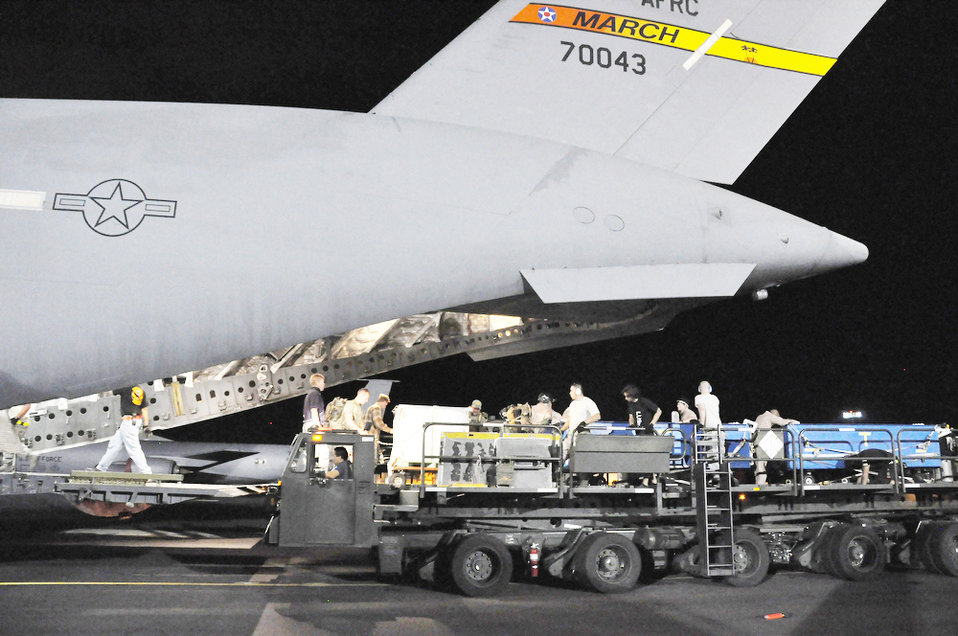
Transportation Command planning equipment shipments

Transportation planners are working closely with operations specialists to accomplish the mission of delivering 30,000 U.S. troops and equipment to Afghanistan when they are needed. They will use C-17 Globemaster IIIs, like the one shown here, as well as C-5 Galaxy aircraft to move outsized military equipment into the area of responsibility.